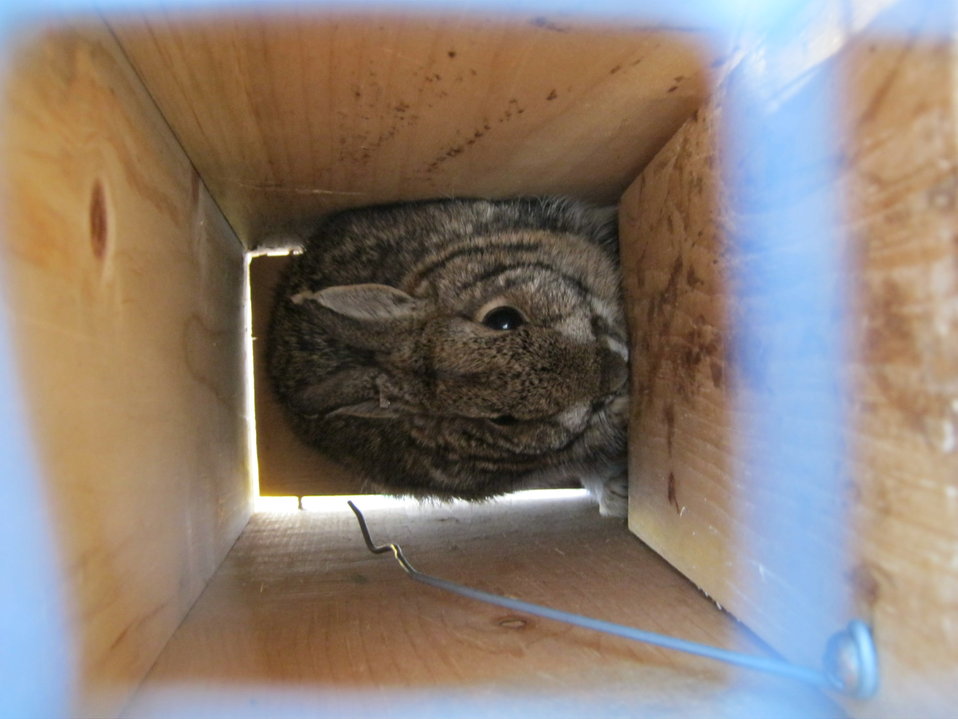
Finding New England cottontails

A cottontail that has been trapped for identification and will be released.